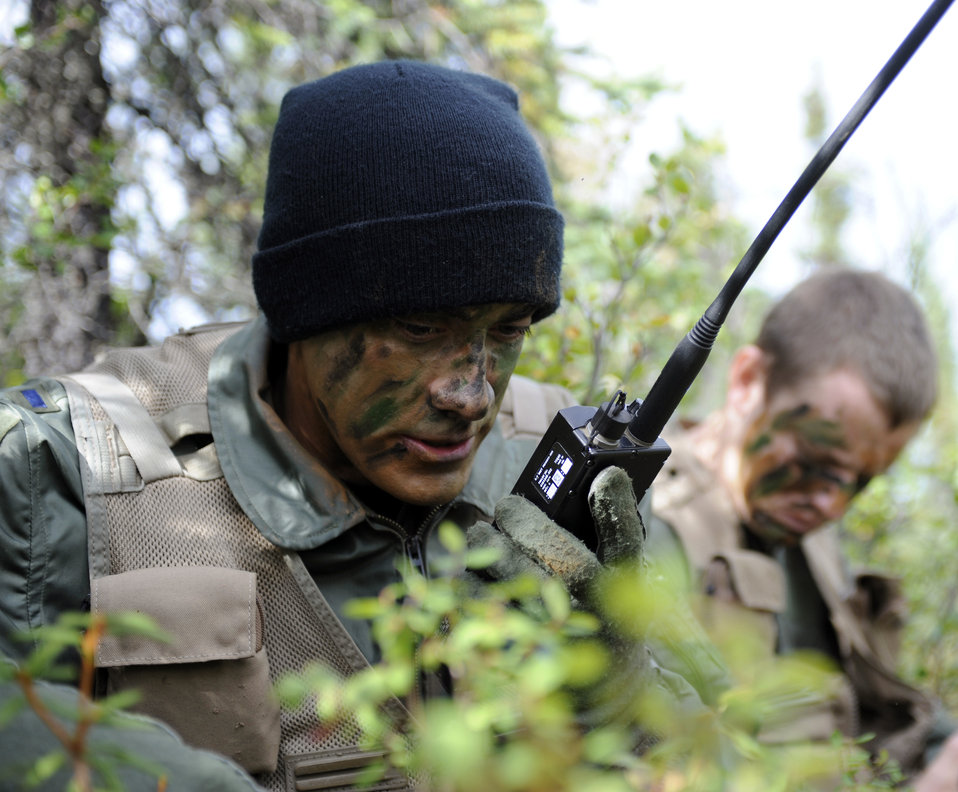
Anyone there?

One of the 'downed' pilots attempts to contact and relay location to rescue forces Aug. 11, 2010, near Eielson Air Force Base, Alaska. The pilots are at Eielson for Red Flag-Alaska 10-4 and were selected to be part of the survival training scenario where they must make contact with recovery forces to be rescued.